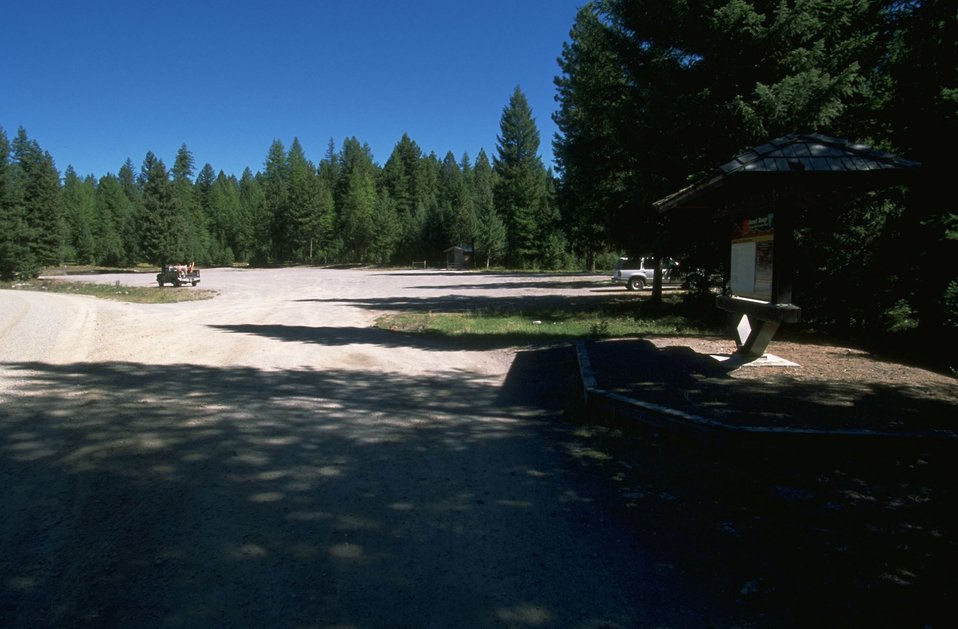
Garnet Back Country Byway kiosk, trail head, parking lot